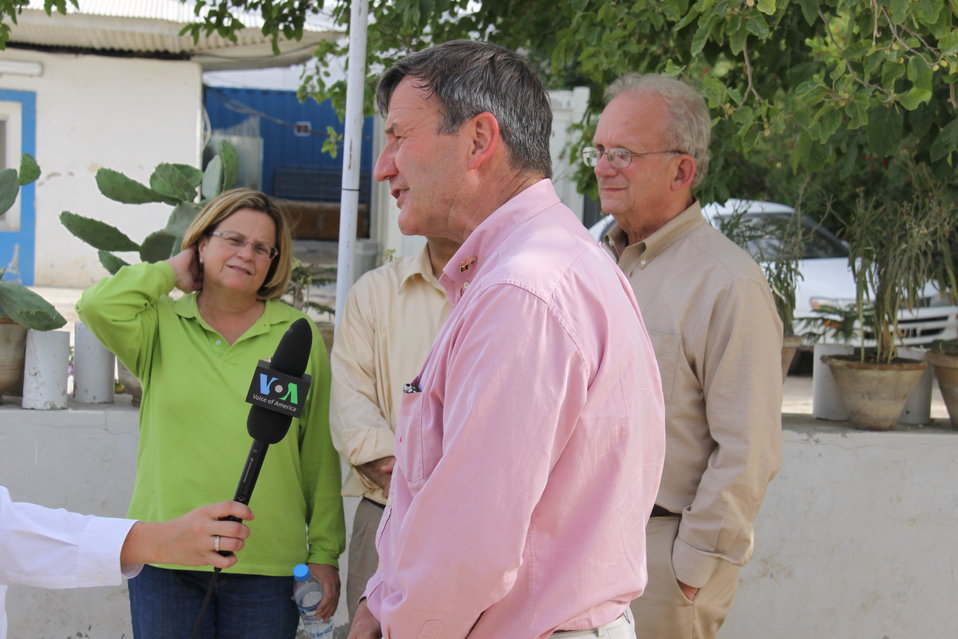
Meeting with Local Leaders in Kandahar